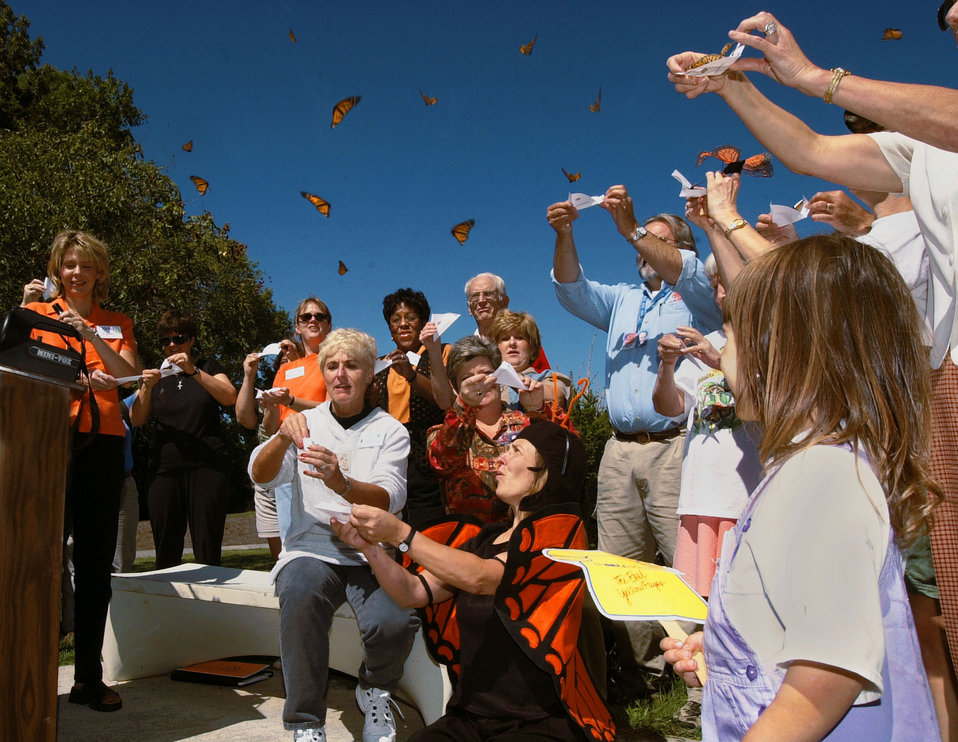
Butterfly release at AMSE Oak Ridge

00-390 DOE photo by Lynn Freeny 2000 Oak Ridge Tennessee